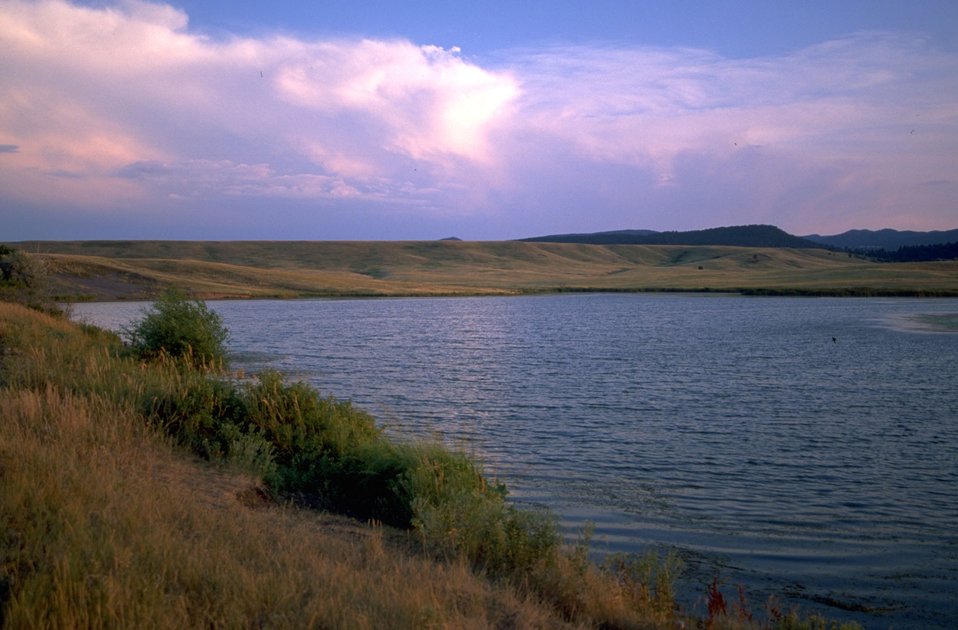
Fort Meade Reservoir